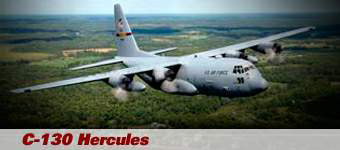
C-130 Hercules

The C-130 Hercules entered the Air Force in December 1956 at Ardmore Air Force Base, Okla.